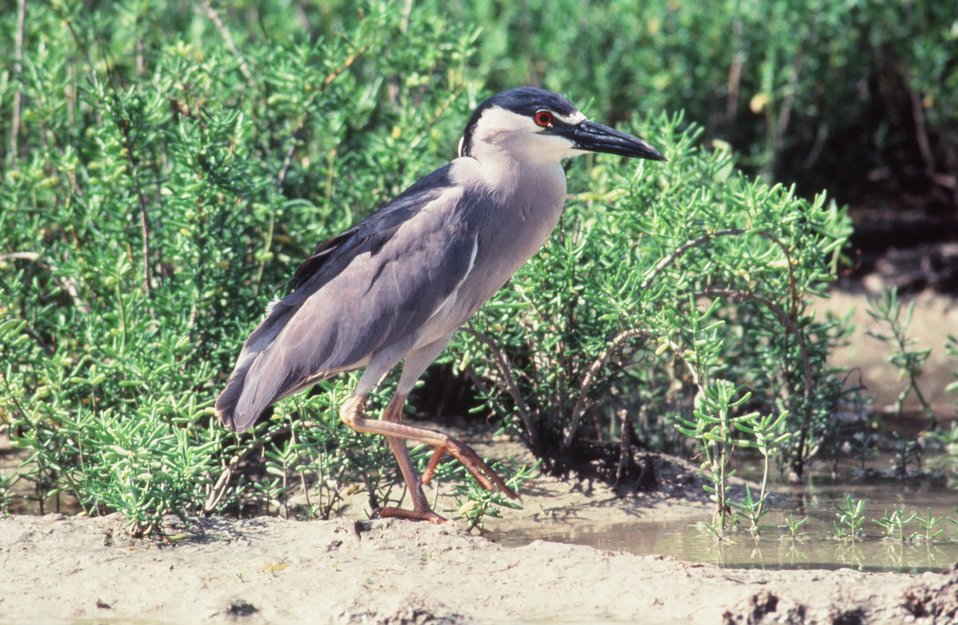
Black-crowned night heron

Black-Crowned Night Herons are medium-sized birds whose habitats are scattered throughout large parts of the Pacific Northwest.